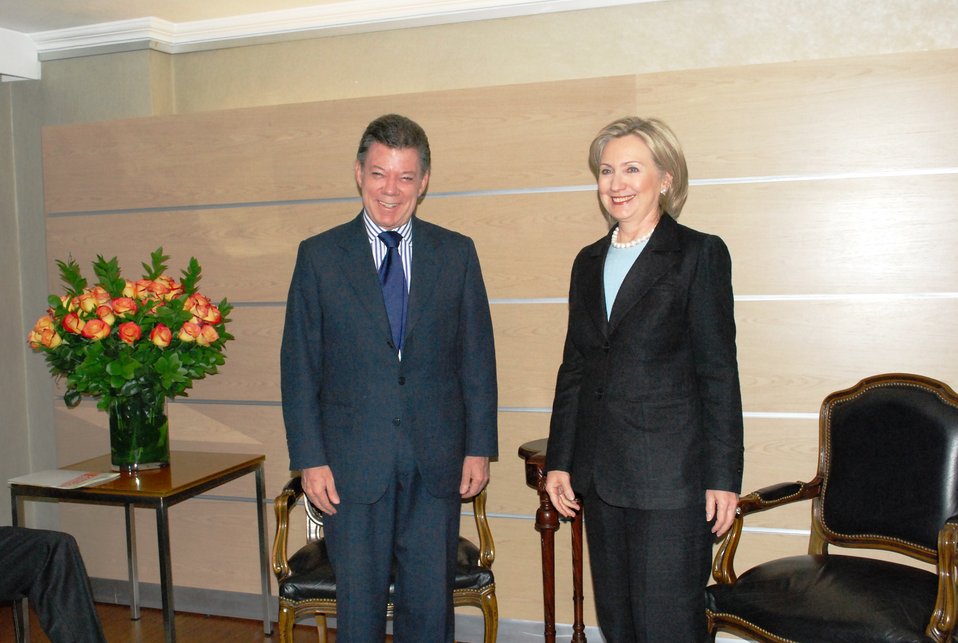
Secretary Clinton Meets With Colombian Presidential Candidate Juan Manuel Santos

U.S. Secretary of State Hillary Rodham Clinton meets with Colombian Presidential Candidate Juan Manuel Santos to discuss issues of bilateral interest at the Hotel Charleston in Bogotá, Colombia, on June 9, 2010.